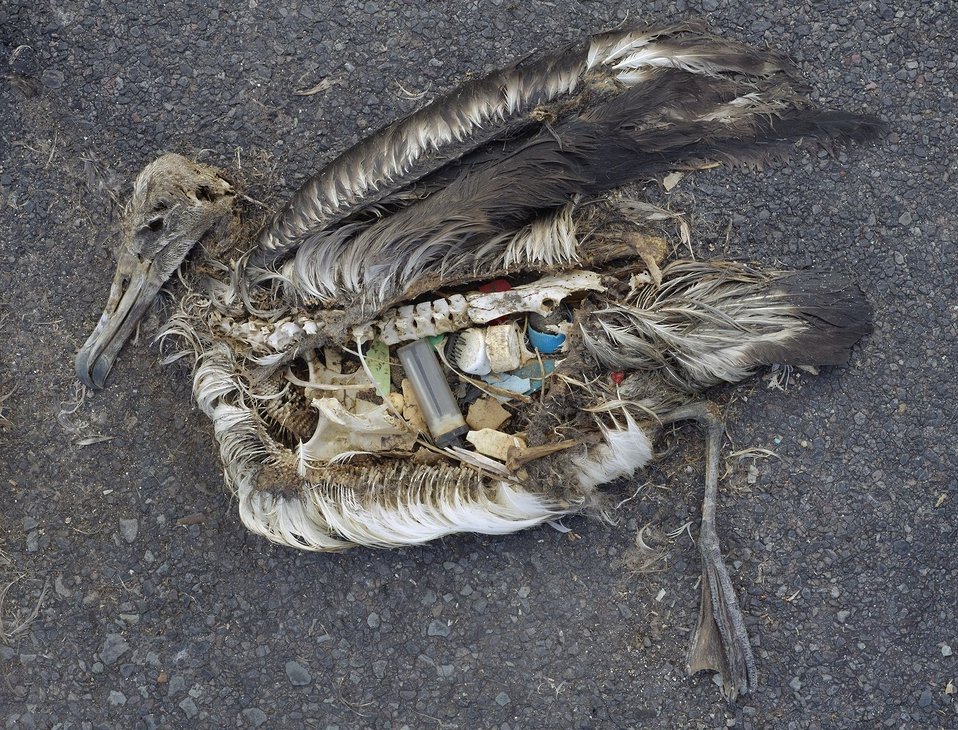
Albatross at Midway Atoll Refuge

The unaltered stomach contents of a dead albatross chick photographed on Midway Atoll National Wildlife Refuge in the Pacific in September 2009 include plastic marine debris fed the chick by its parents. (Chris Jordan)